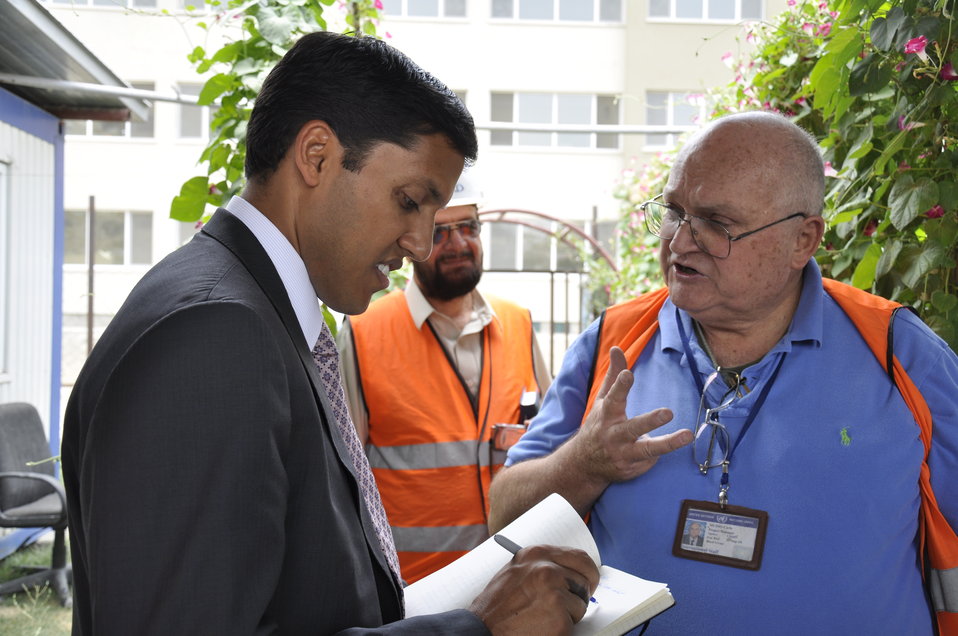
Ghazni High School in Kabul